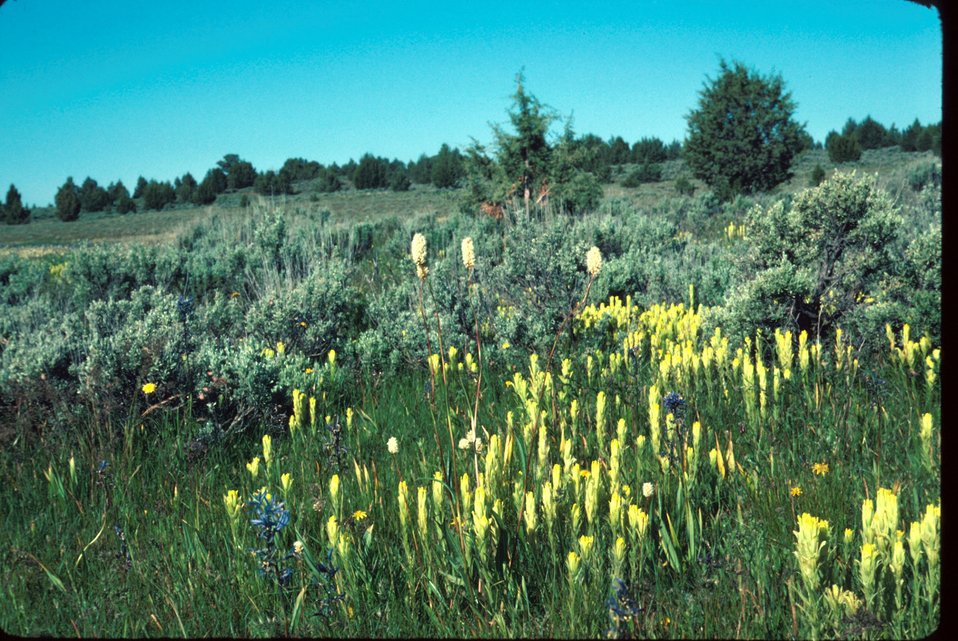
West meadow in the Owyhee Mountain Castilleja Sp., Indian paintbrush Wildflower